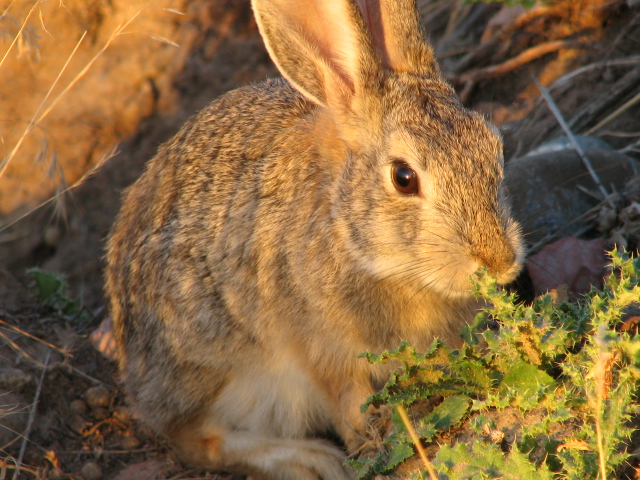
Desert Cottontail, Converse County, WY.

Credit: Pedro 'Pete' Ramirez, Jr. / USFWS